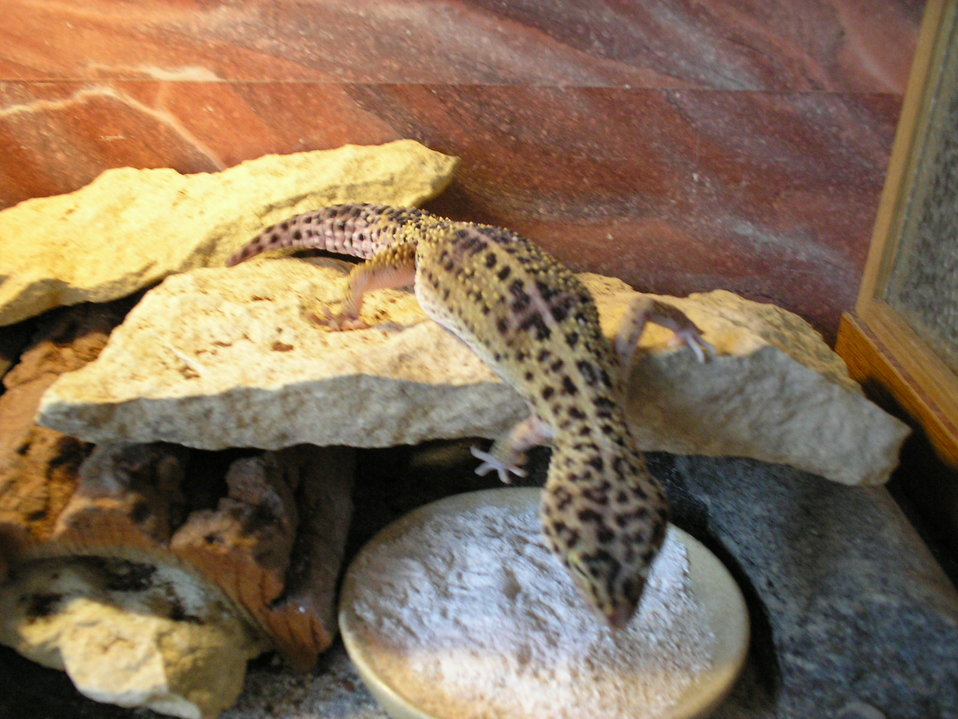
Čeština: Moji ještěři